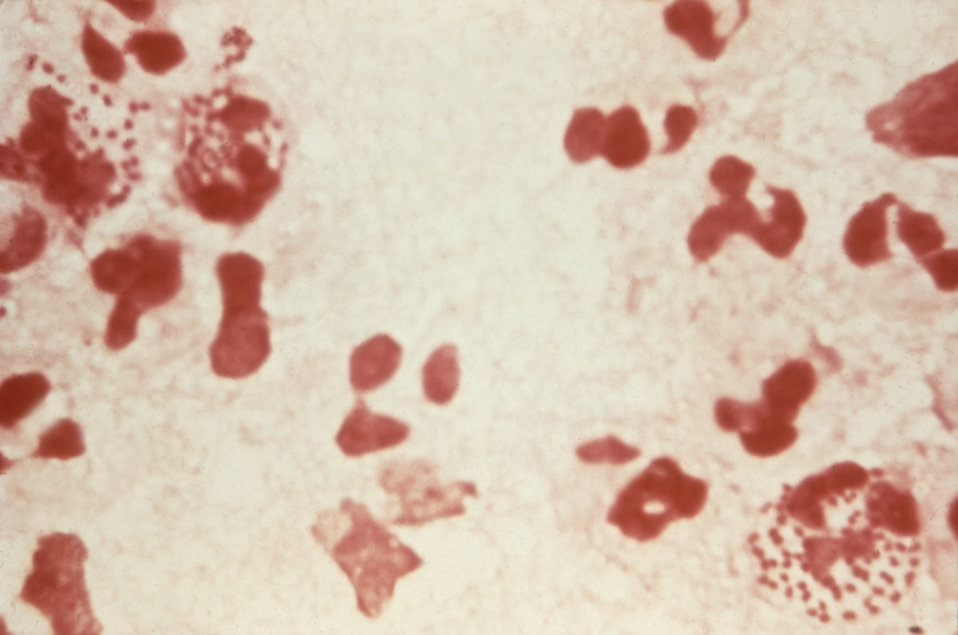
This Gram-stained specimen reveals N. gonorrhoeae intracellular diplococci, leading to a positive diagnosis of gonorrhea.